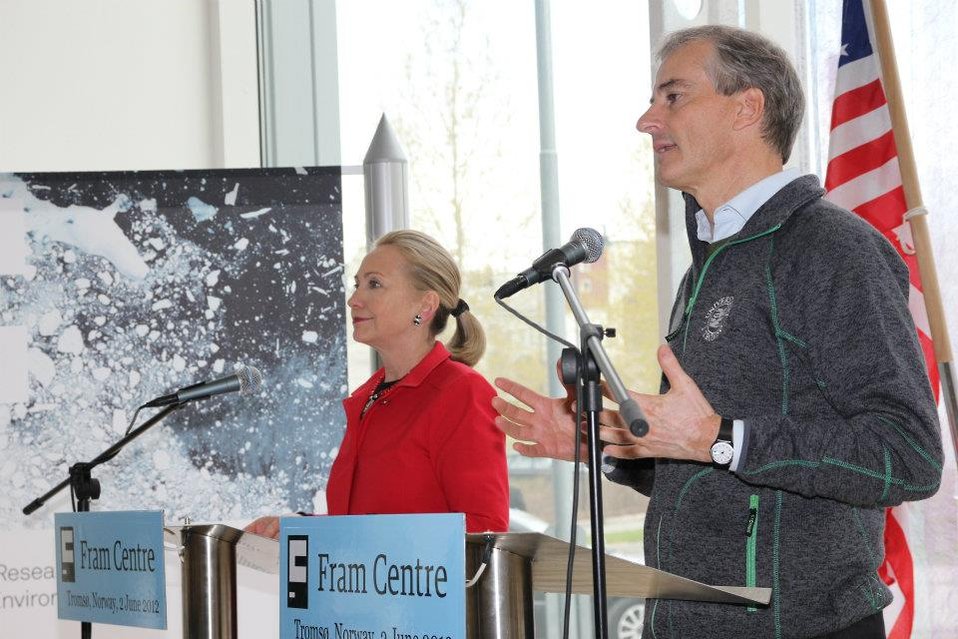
Secretary Clinton and Norwegian Foreign Minister Store Address Reporters

U.S. Secretary of State Hillary Rodham Clinton and Norwegian Foreign Minister Jonas Gahr Store deliver joint press statements after participating in a discussion on High North, Environment, Energy, Business, and Climate in Tromso, Norway, on June 2, 2012.